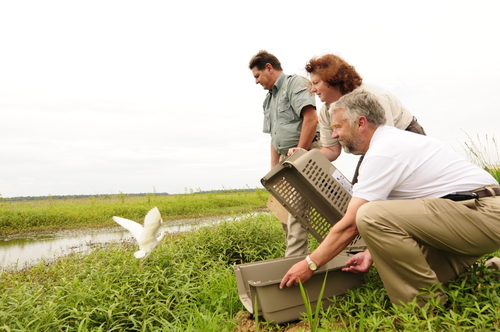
USFWS Acting Director Rowan Gould releases Egret

RAMAH, La. - From left, Robert Love of the Louisiana Department of Wildlife and Fisheries, Dr. Sharon Taylor of the U.S. Fish and Wildlife Service, and Dr. Rowan Gould, Acting Director of the U.S. Fish and Wildlife Service, free a cattle egret at the Sherburne Wildlife Management Area in Ramah, La., June 3, 2010. The bird was found oiled on the coast of Louisiana and then cleaned and cared for at a rehabilitation center in Fort Jackson, La., before being released back into the wild. U.S. Coast Guard photo by Petty Officer 1st Class Luke Pinneo